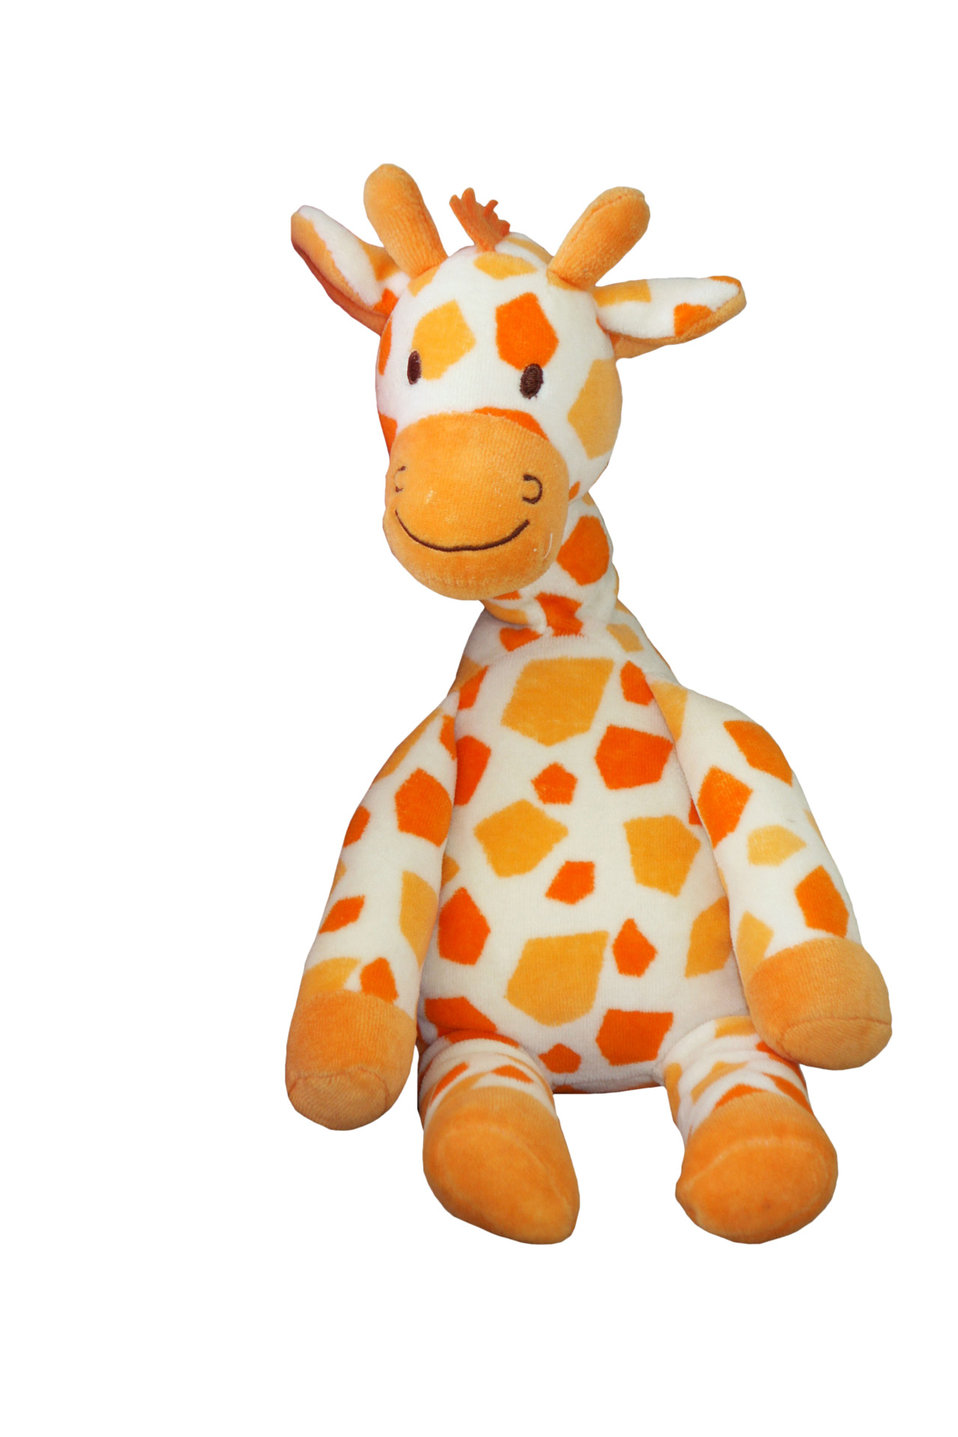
Giraffe plush toy isolated on white background.